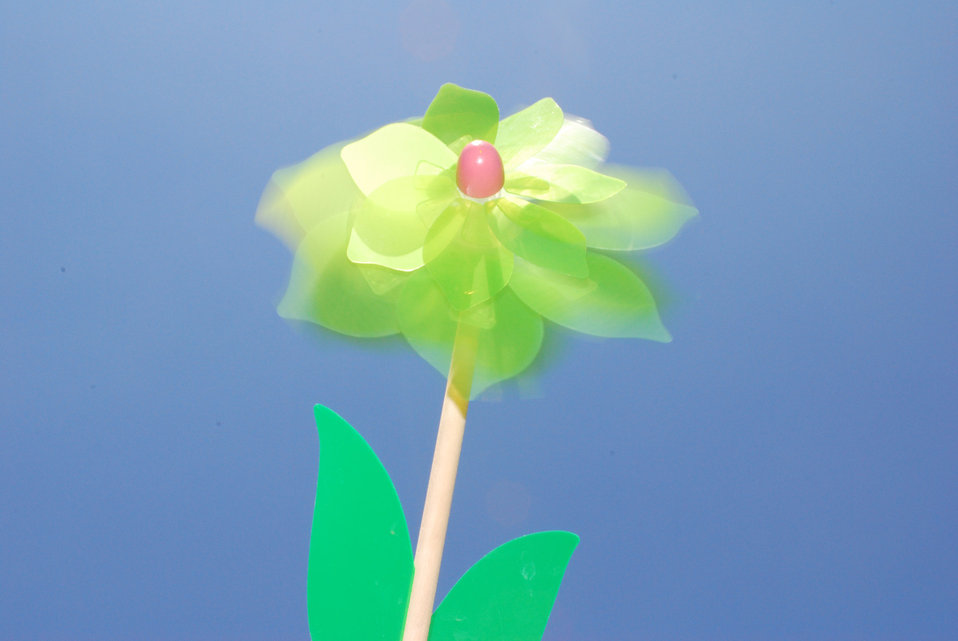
Pin wheel in the sky

Green pin wheel blowing in the wind against a clear blue sky..